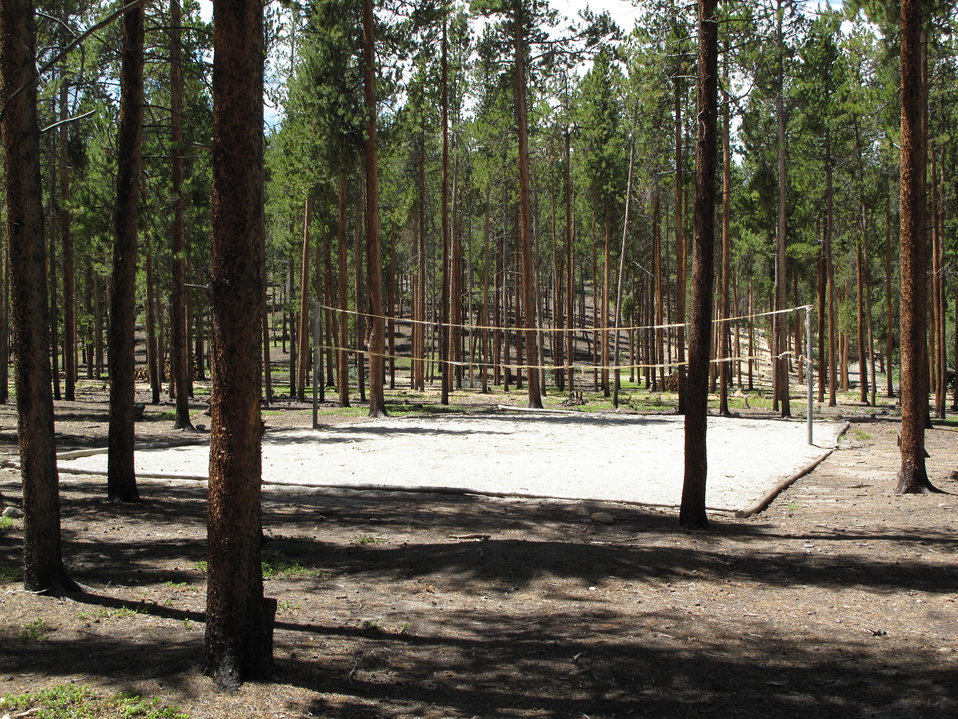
Leadville National Fish Hatchery

Sand Volleyball